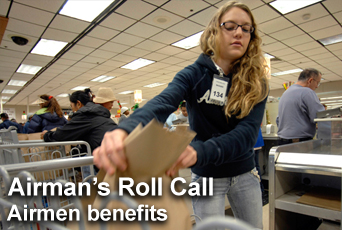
Airman's Roll Call: Air Force offers benefits to Airmen

Purchasing groceries at the commissary is another great way for Airmen and their families to save money. Items bought at the commissary are sold at cost plus a mere five percent, which covers some operational costs.